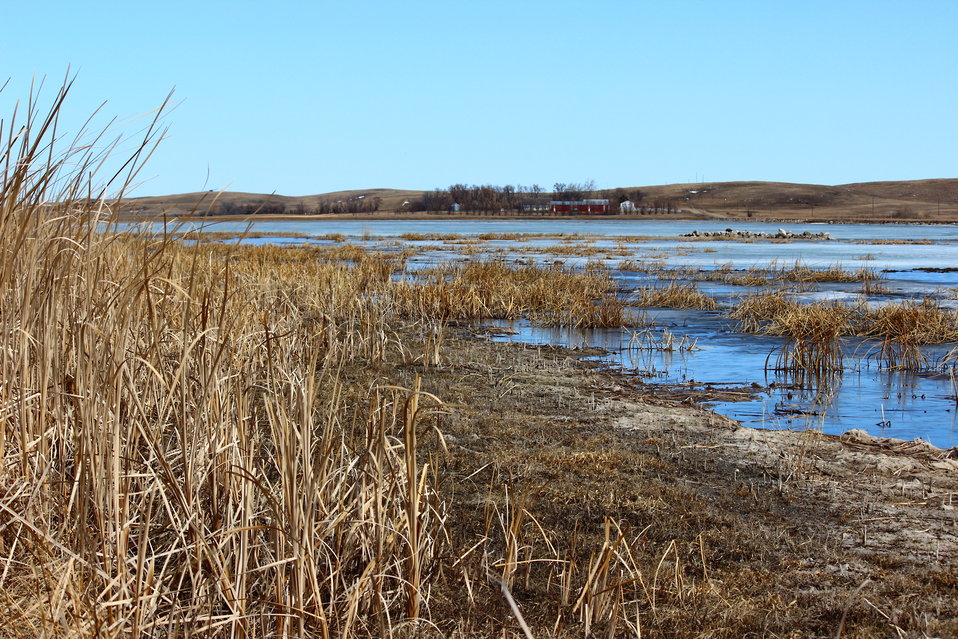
Ketterling WPA

Shorelines are still frozen along the Ketterling WPA in Logan County.